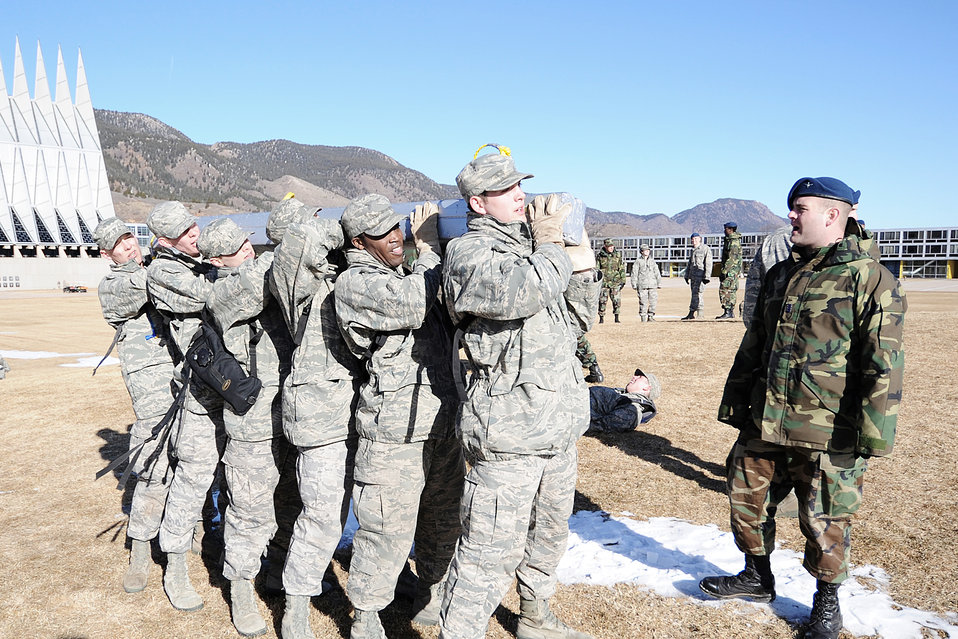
Recognition Days

Cadet senior Zack Bartsch directs freshmen members of Cadet Squadron 31 on how to handle their charge during Recognition Days at the U.S. Air Force Academy, Colo., March 12, 2010. Recognition consists of several days of mentally and physically demanding activities, and culminates with the ascension of the freshmen into the ranks of upper class cadets.